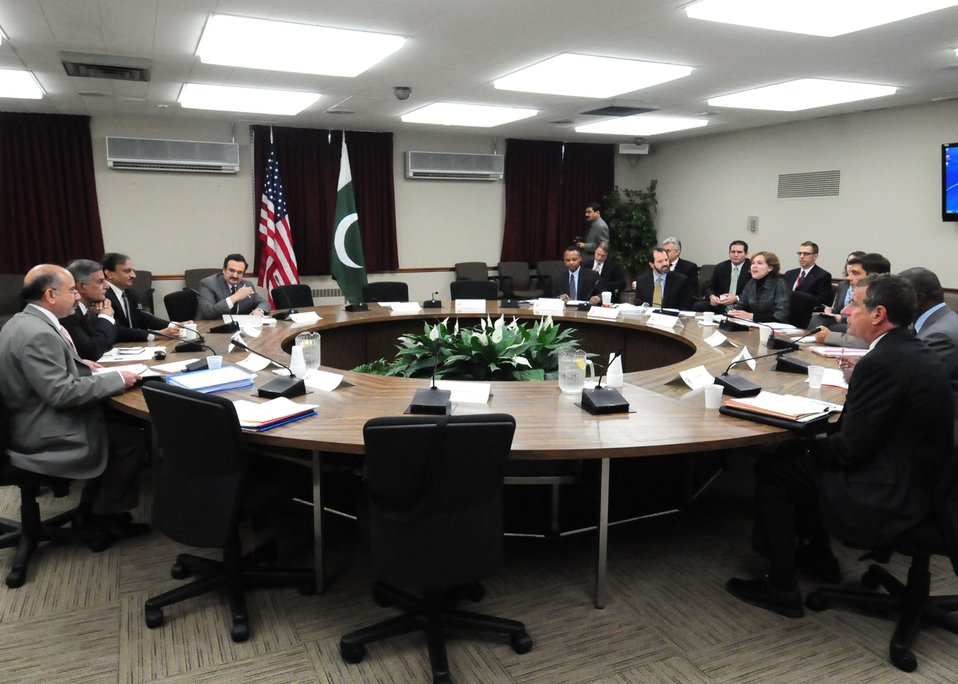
Members of the U.S.-Pakistan Strategic Dialogue Agriculture Working Group Interact

Members of the U.S.-Pakistan Strategic Dialogue Communications Working Group interact at the U.S. Department of State in Washington, D.C., on October 20, 2010. Participants included by U.S. Department of Agriculture Deputy Under-Secretary Darcy Vetter, USAID Director Alex Their, Pakistani Minister of Agriculture Nazar Muhammad Gondal and Pakistani Secretary of Agriculture Junaid Iqbal Chowdry. State Department photo/ Public Domain]